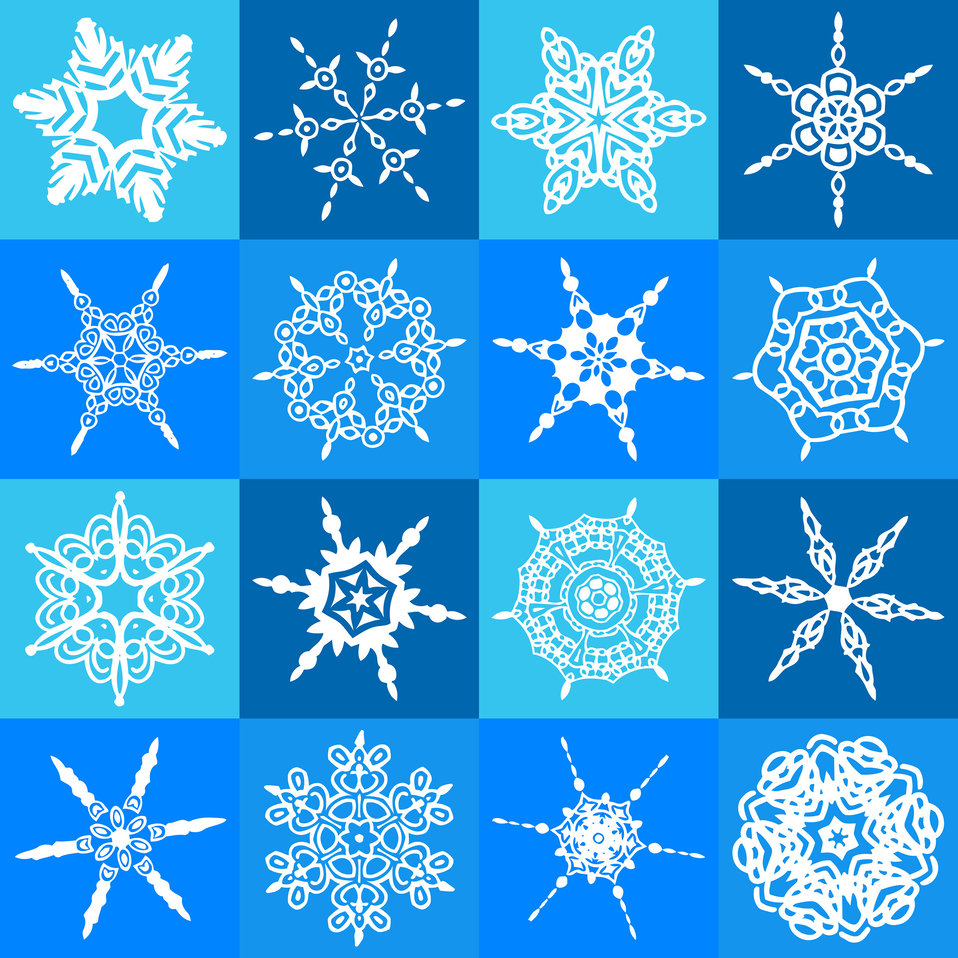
Snowflake pattern

Seamless blue snowflake pattern.